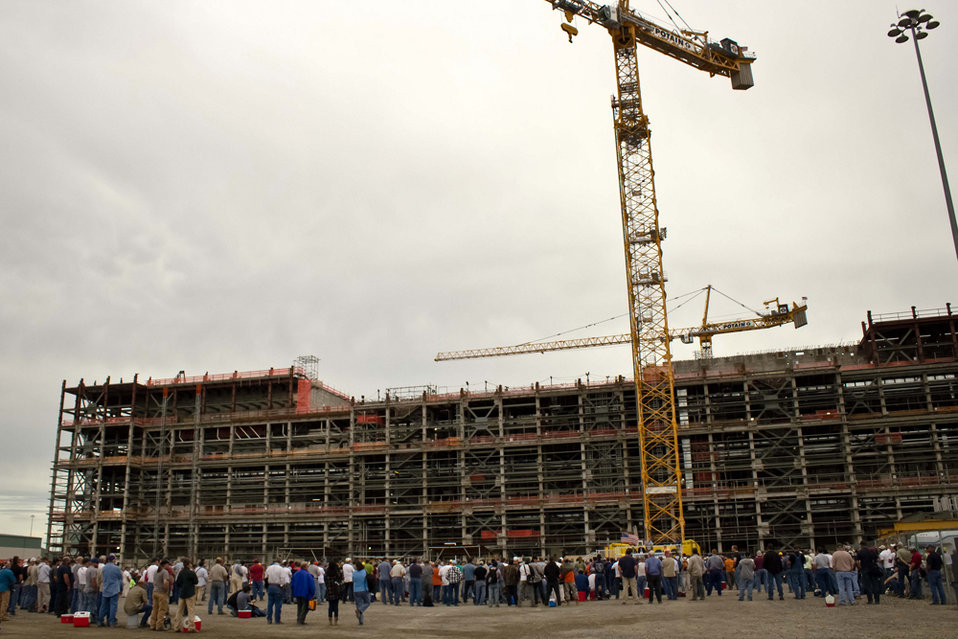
Department of Energy Secretary Chu

Employees at Hanford's massive Waste Treatment Plant construction project gather around during an all-employee meeting with the Department of Energy's Secretary Chu in June.